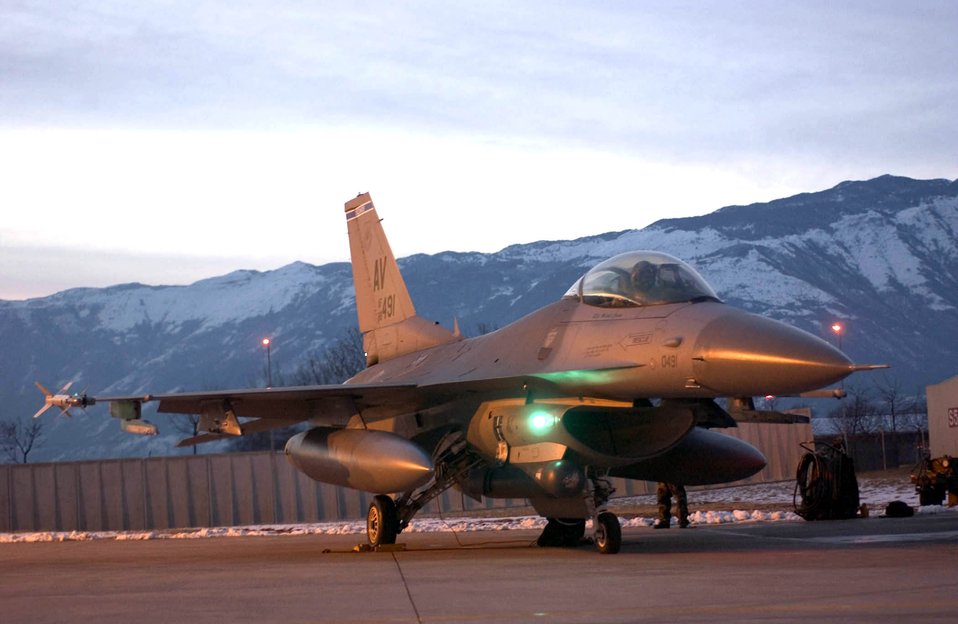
Frozen Falcons

AVIANO AIR BASE Italy -- An F-16 Fighting Falcon is ready to launch after nearly six inches of snow accumulated here Feb. 21. The area averages less than four inches of snowfall annually; the last significant snowfall was in December 2001.